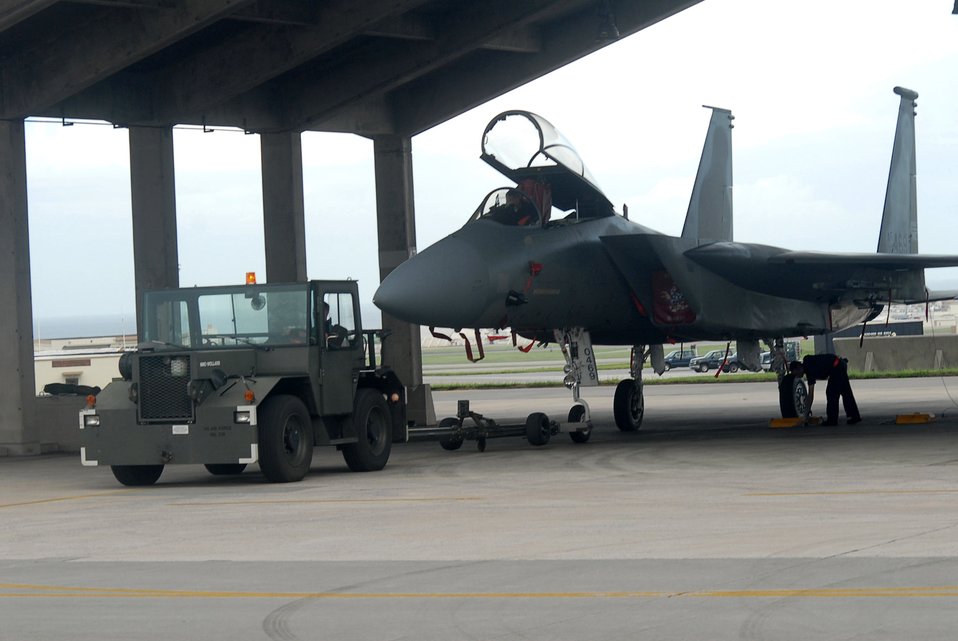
Typhoon Nari heads for Okinawa

Airmen tow an F-15 Eagle from the flightline into a protective aircraft shelter during preparation for Typhoon Nari Sept. 14 at Kadena Air Base, Japan. Base members prepared for the typhoon by moving jets and equipment from the flightline into protective aircraft shelters and evacuated many aircraft to locations throughout the Pacific. The typhoon is scheduled to hit the island the evening of Sept. 14 with 45 knot winds gusting to 65 knots.